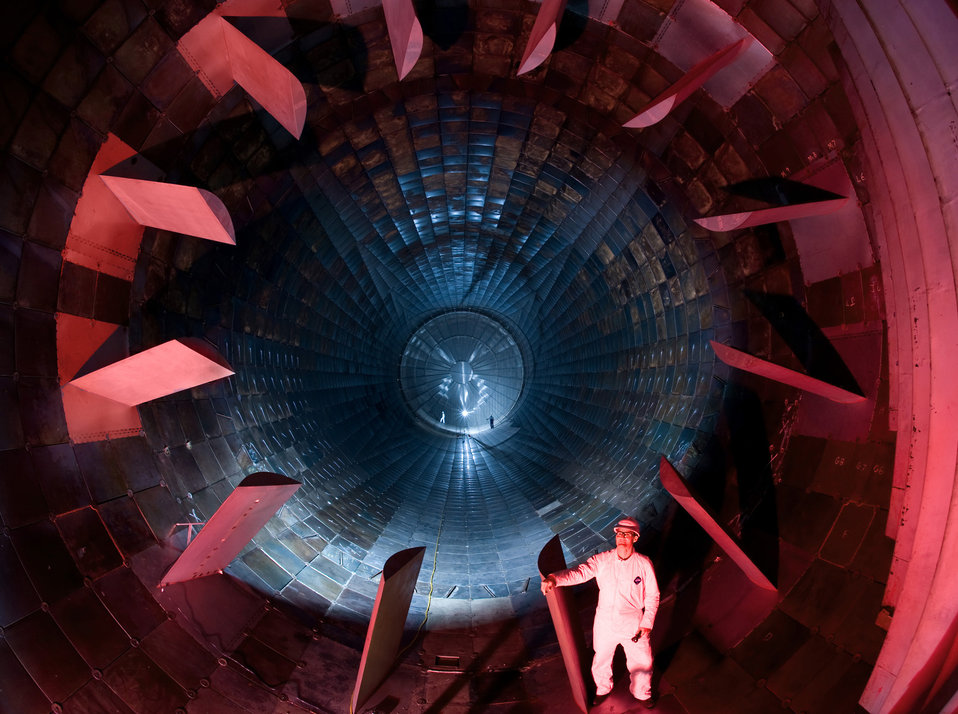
Blow Hard

Dr. Richard Roberts conducts a site visit inside the diffuser section of the16-foot supersonic wind tunnel (16S) at Arnold Air Force Base, Tenn. On Oct. 6, 2009. Dr. Roberts is the Project Manager of the von Karman Gas Dynamics Facility (VKF) and the Propulsion Wind Tunnel Facility (PWT), located at Arnold Engineering Development Center (AEDC). There are three wind tunnels. They use two closed-circuit wind tunnels (one to simulate transonic speeds and the other supersonic), with 16-foot-square test sections, are also used for conventional aerodynamic tests. Air that has been pushed through the section seen has passed through progressively narrowing tunnel sections and 90-degree turns that lead to the test section. The PWT test section is as tall as a two-story house and as heavy as a railroad locomotive. The inside of the test section is 16? tall. They are positioned just behind a 40 feet long variable venturi, side walls that have hydraulic pistons to push the two flexible 16 foot tall by 40 foot long wall toward each other or apart to adjust the air speed and maintain smooth air flow into the test section. The facility is devoted to aerodynamic and propulsion integration testing of large-scale aircraft models. Some of the most powerful electric motors ever built are located in the PWT facility.